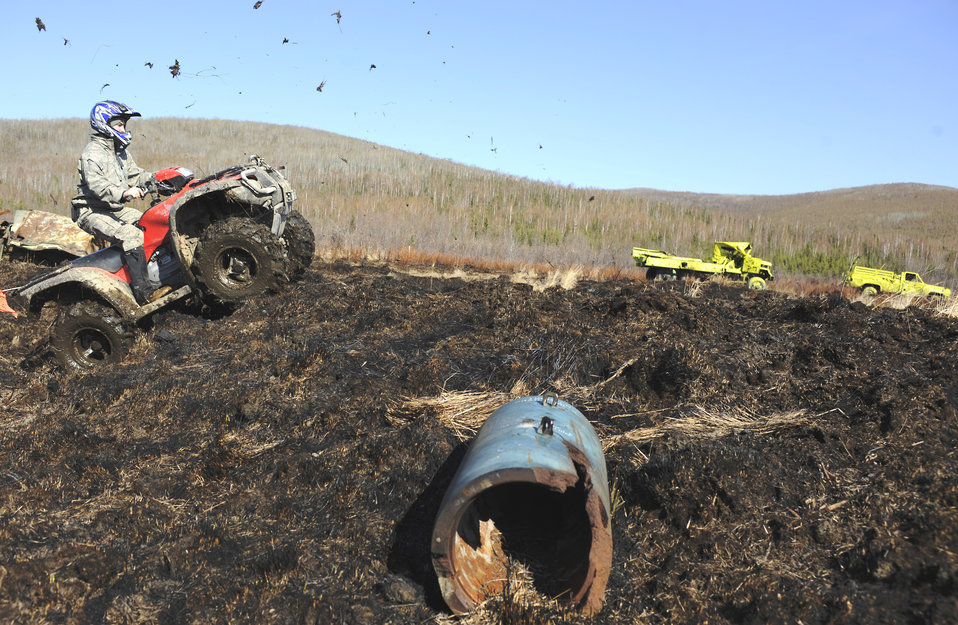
Servicemembers clear Alaskan bombing range

Airman 1st Class Brandon Wood uses an all-terrain vehicle to cover more ground in search of inert and live ordnance on the Yukon training area May 14 at Eielson Air Force Base, Alaska. Explosive ordnance disposal Airmen and Marines cleared 10,000 acres of land by walking within close proximity to each target while others used ATVs' to navigate the remaining terrain. Airman Wood is assigned to the 354th Civil Engineer Squadron EOD shop.